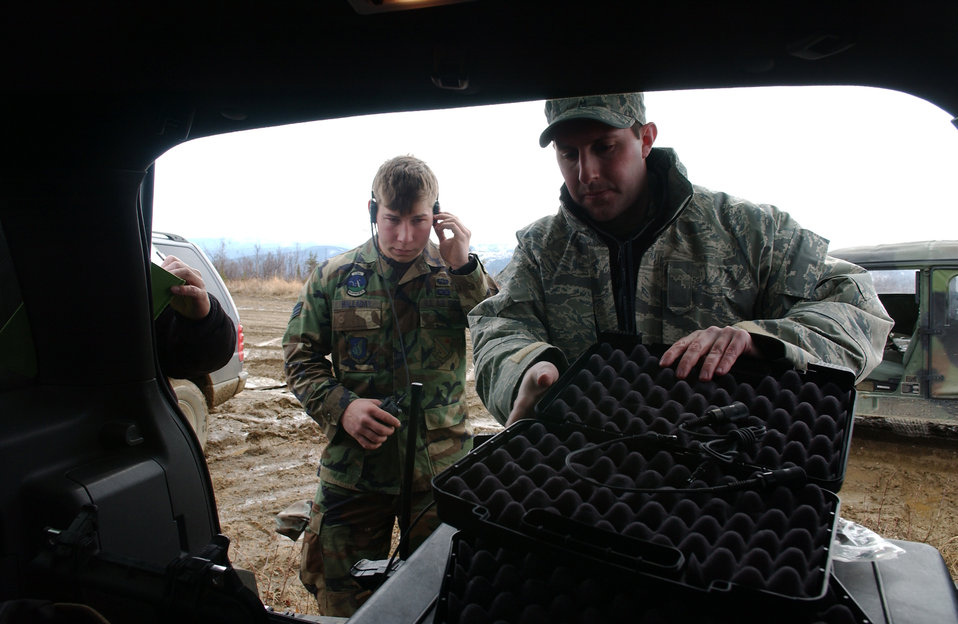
New experimental equipment enhances Airmen capabilities

Senior Airman Nicholas Halladay tries out new communication equipment while Gregory Burnett gathers more equipment for testing during Exercise Northern Edge May 5 at Eielson Air Force Base, Alaska. Tactical air control party Airmen are helping test new experimental equipment in the field. Airman Halladay is a TACP assigned to Det. 1, 3rd Air Support Operation Squadron from Fort Richardson, Alaska. Mr. Burnett is a chief engineer with Air Force Research Labs from Wright-Patterson AFB, Ohio.